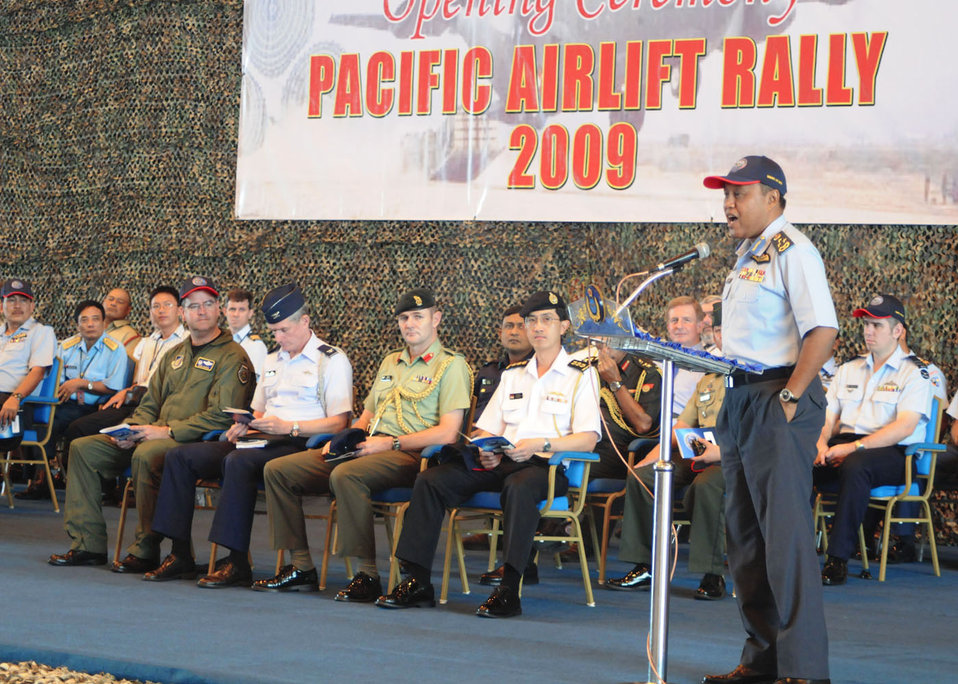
Pacific Airlift Rally 2009 kicks off

Royal Malaysian Air Force Lt. Gen. Dato Rodzali bin Daud addresses visiting airmen during the opening ceremony of Pacific Airlift Rally 2009 Aug. 18 at Subang Royal Mayaysian Air Force Base, Malaysia. The biennial symposium involves Pacific Rim nations and enhances military airlift interoperability with a focus in humanitarian assistance and disaster relief operations.